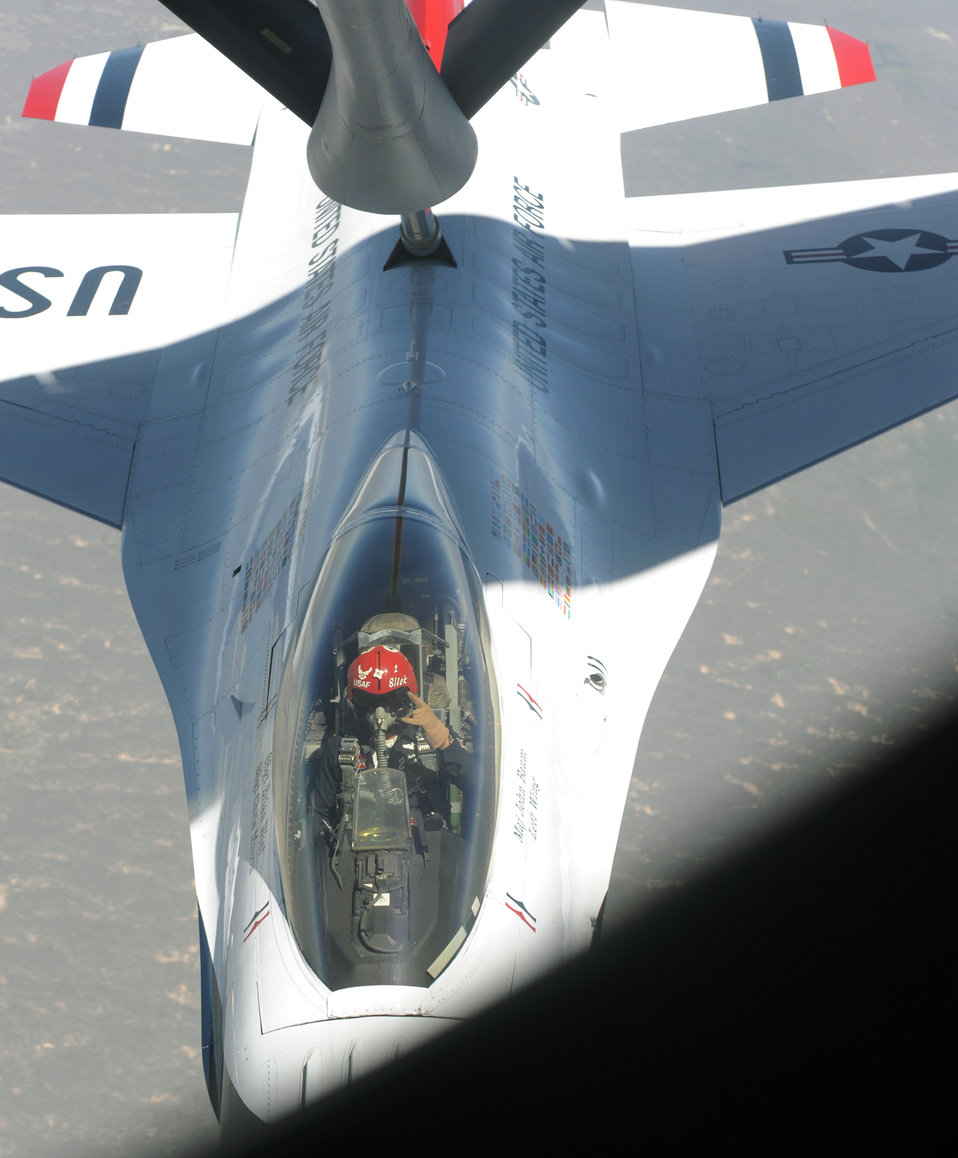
Time to gas up

Maj. John Baum, the No. 2 pilot with the U.S. Air Force Thunderbirds, gives a